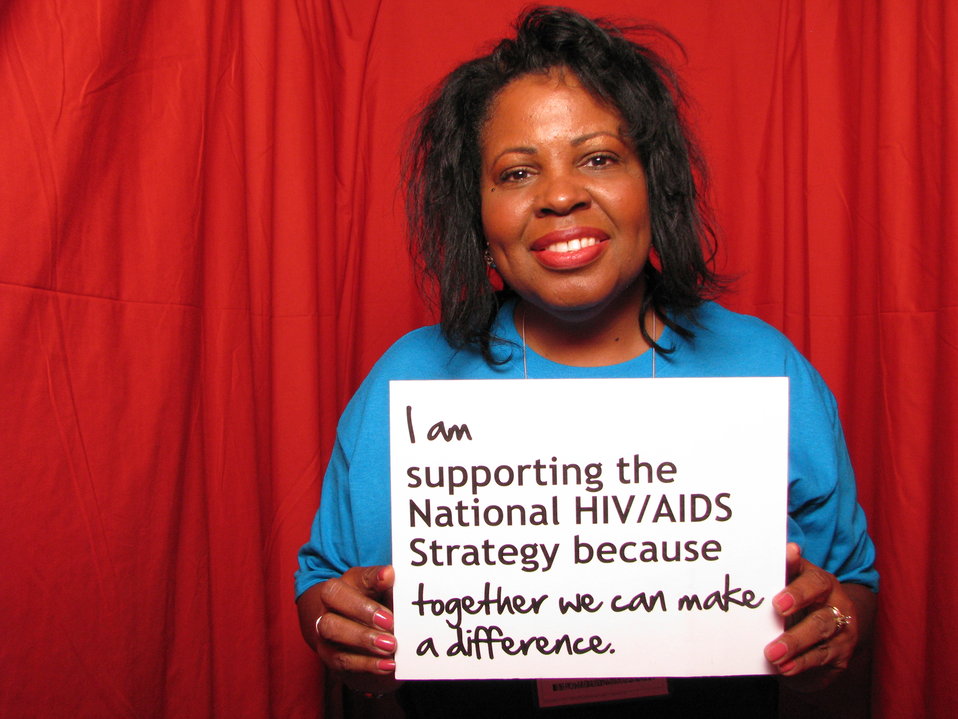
I am supporting the National HIV/AIDS Strategy because together we can make a difference.

From the AIDS.gov photo booth at the U.S. Conference on AIDS, September 2010 (Orlando, FL).